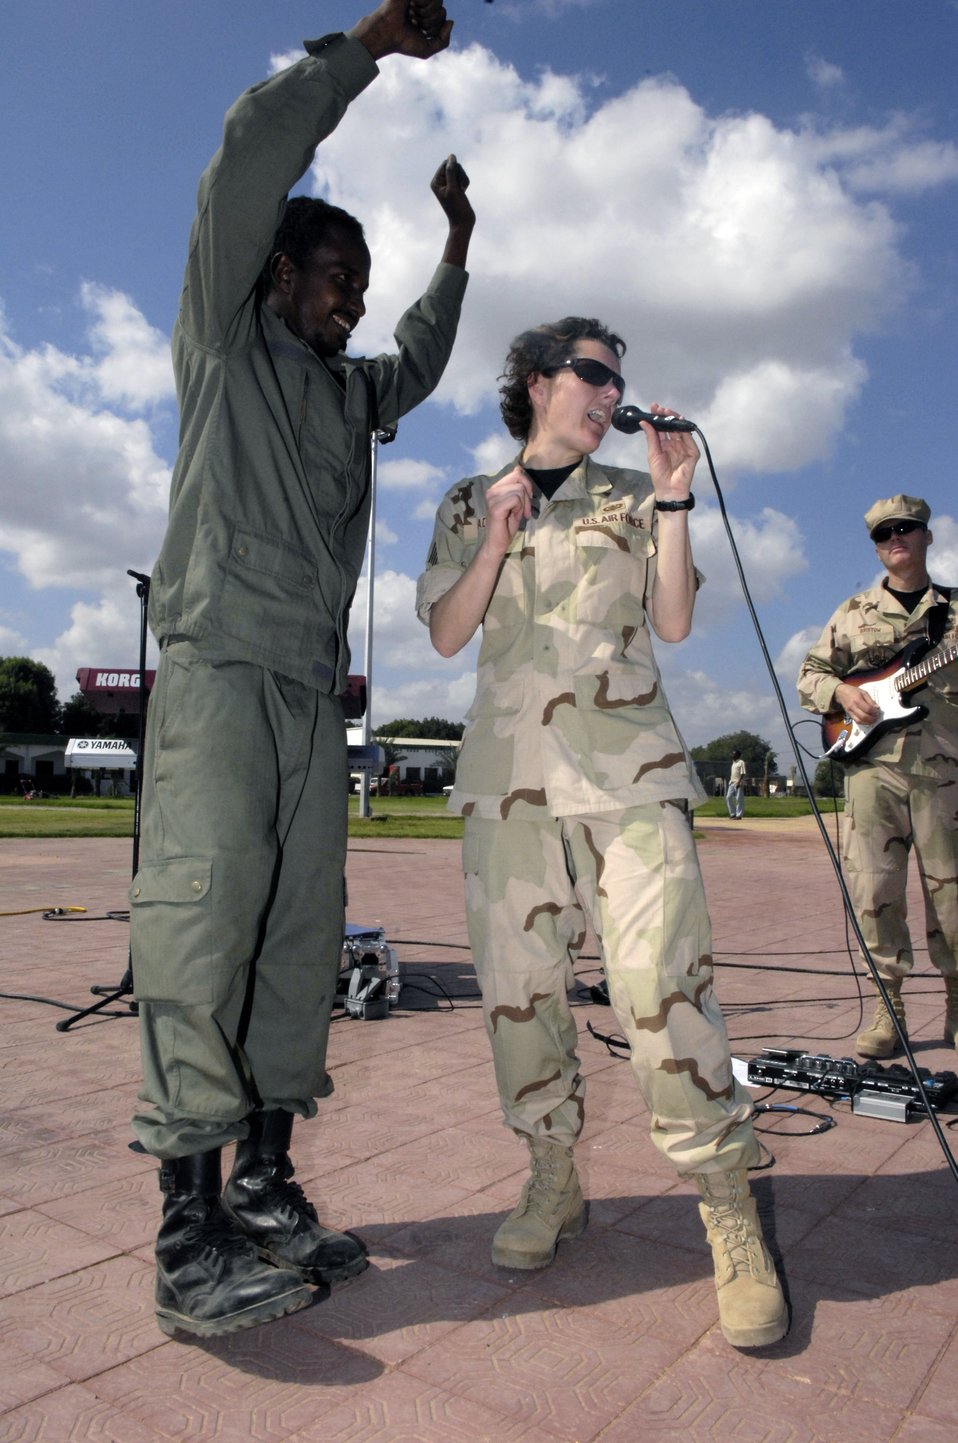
I've got the music in me

Tech Sgt. Julie Bradley, a vocalist with the CENTAF band, sings as a cadet dances during a performance Jan. 22 at the national police academy at Camp Lemonier, Djibouti. The CENTAF band